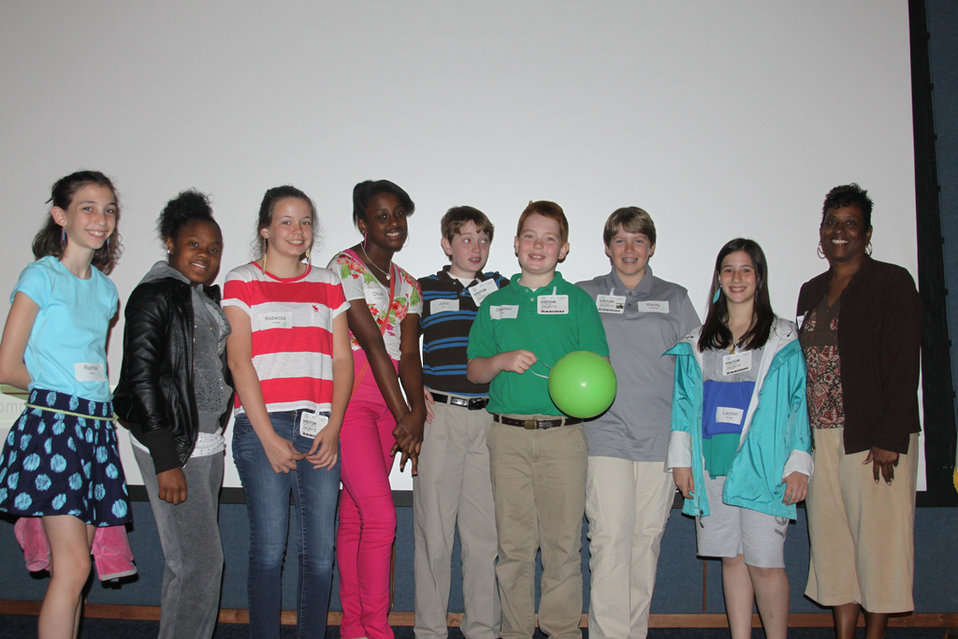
Sheila's Group